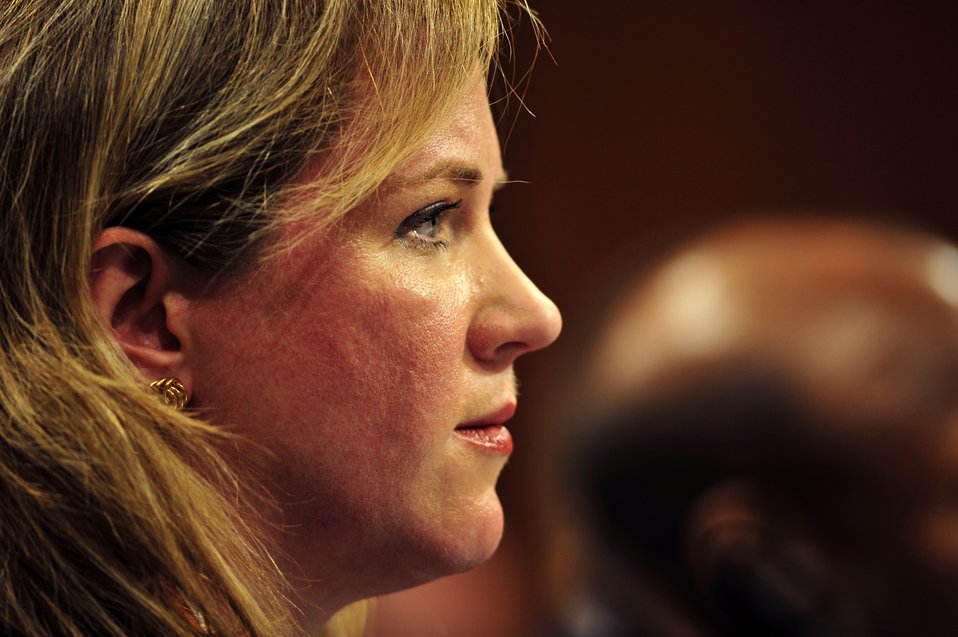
Air Force undersecretary nominee testifies

Erin Conaton, nominee for undersecretary of the Air Force, listens to opening remarks by Senators Carl Levin, D-Mich., and John McCain, R-Ariz., during a Senate Committee on Armed Services hearing Nov. 19, 2009, on Capitol Hill. If confirmed, Ms. Conaton also will serve as the chief management officer for the Air Force.